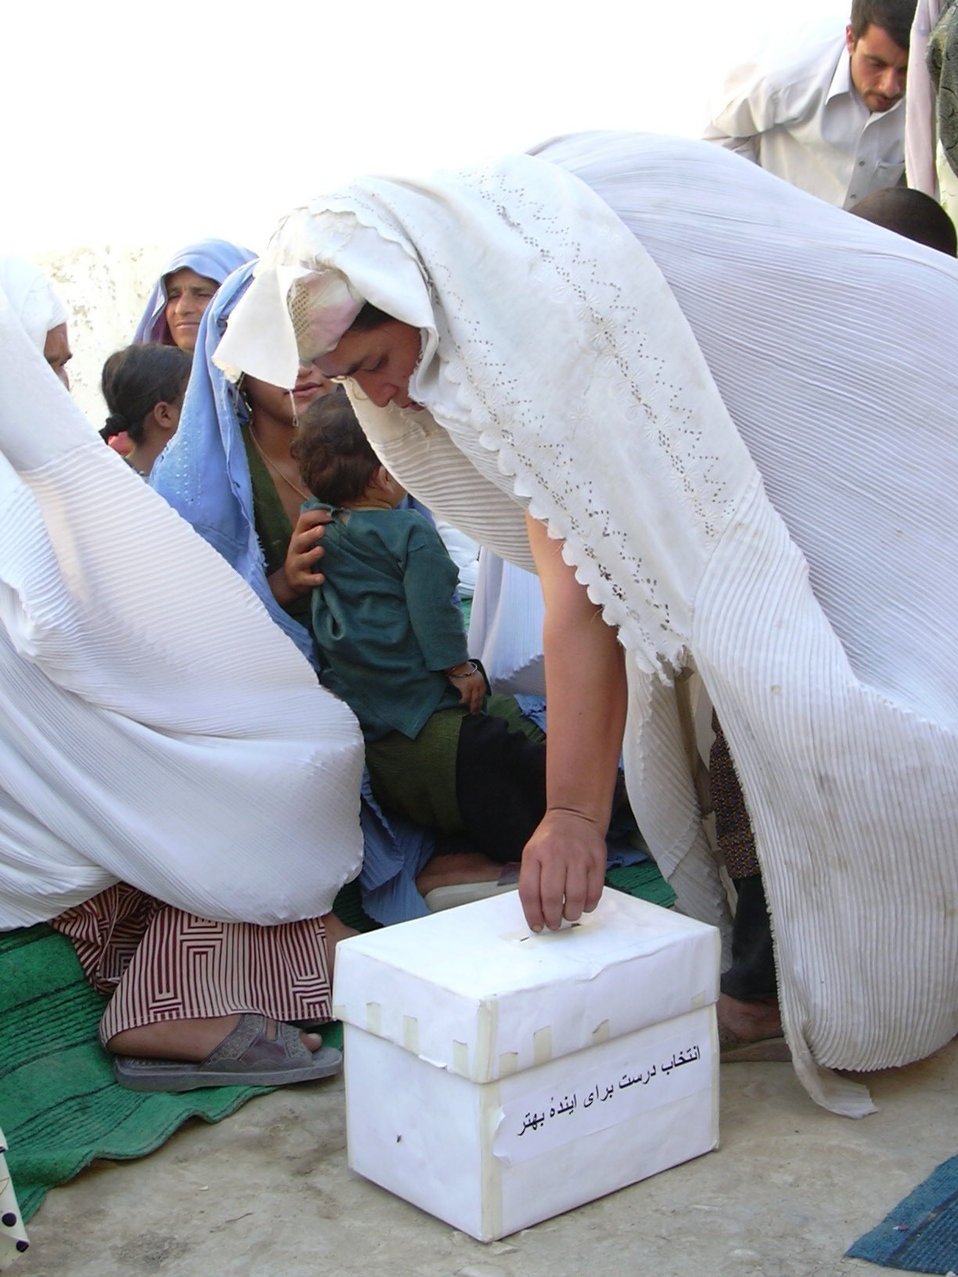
Pic09 Mazar women voting 2003